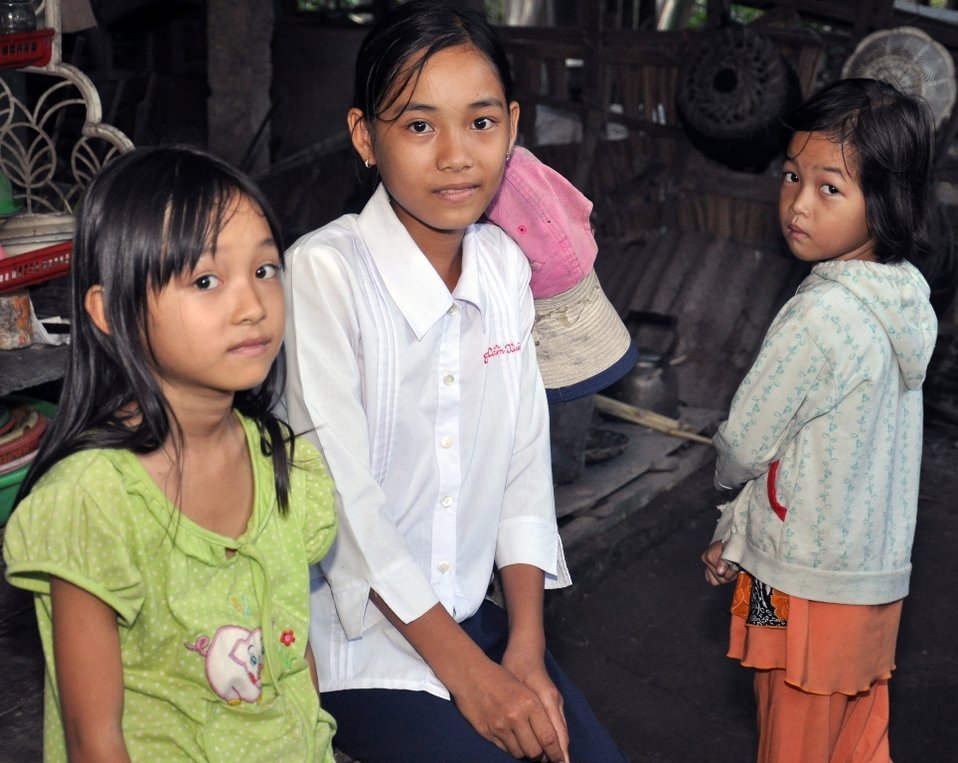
USAID supports girls education

Young girls in southern Vietnam profit from support that helps keep her in school and be recognized for her high marks learning how to avoid risky offers of employment that could leave to human trafficking and labor exploitation.